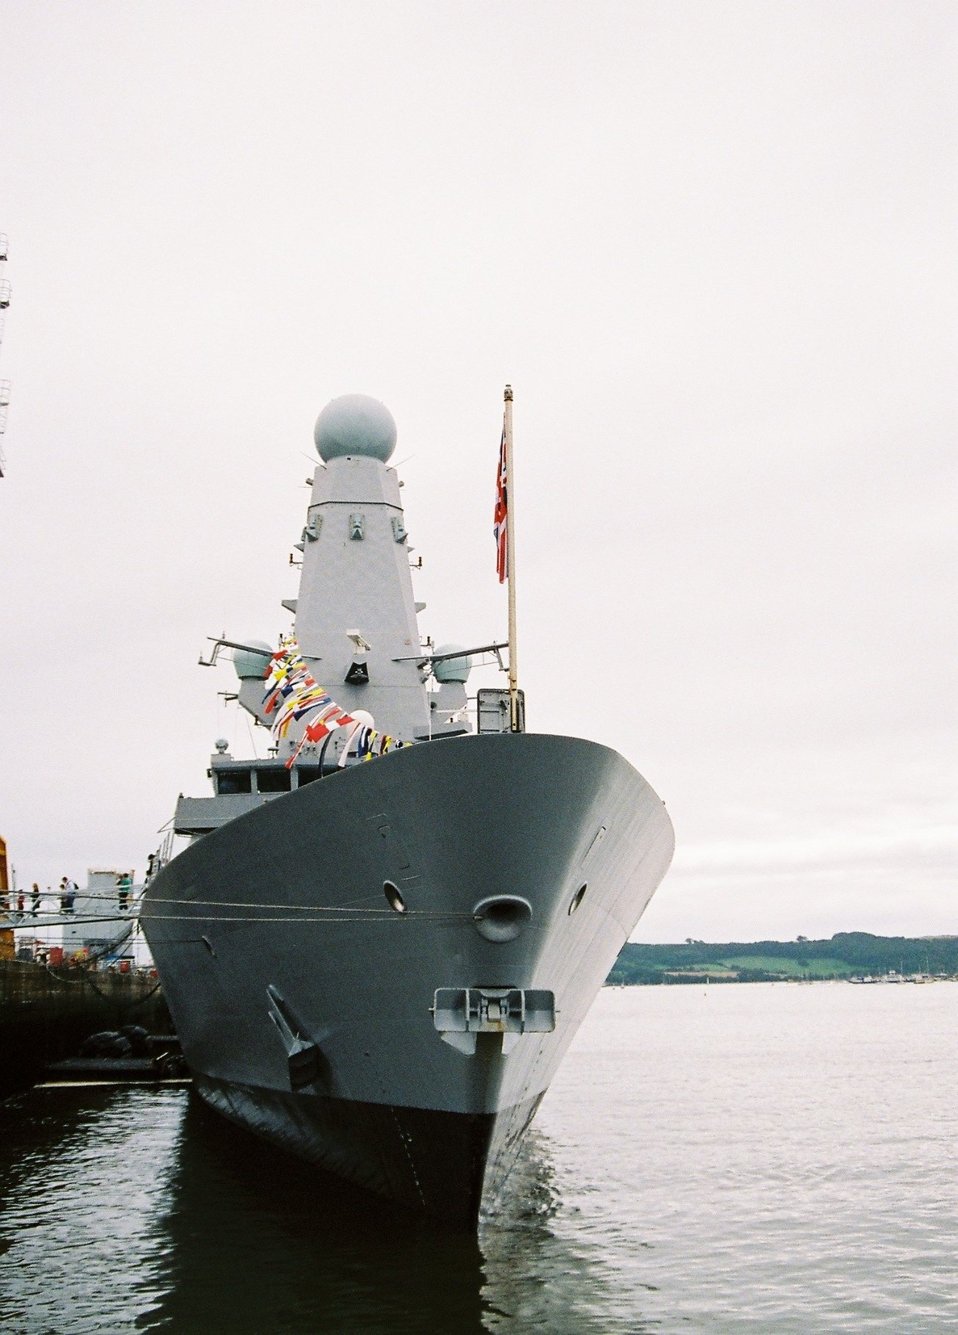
HMS Daring bow view, Devonport Navy Days Saturday September 5th 2009. (I, Adrian Jones, am the photographer. I release this image to public domain. Permission was granted for this photo to be taken and no classified details or locations are compromised by this photograph.)